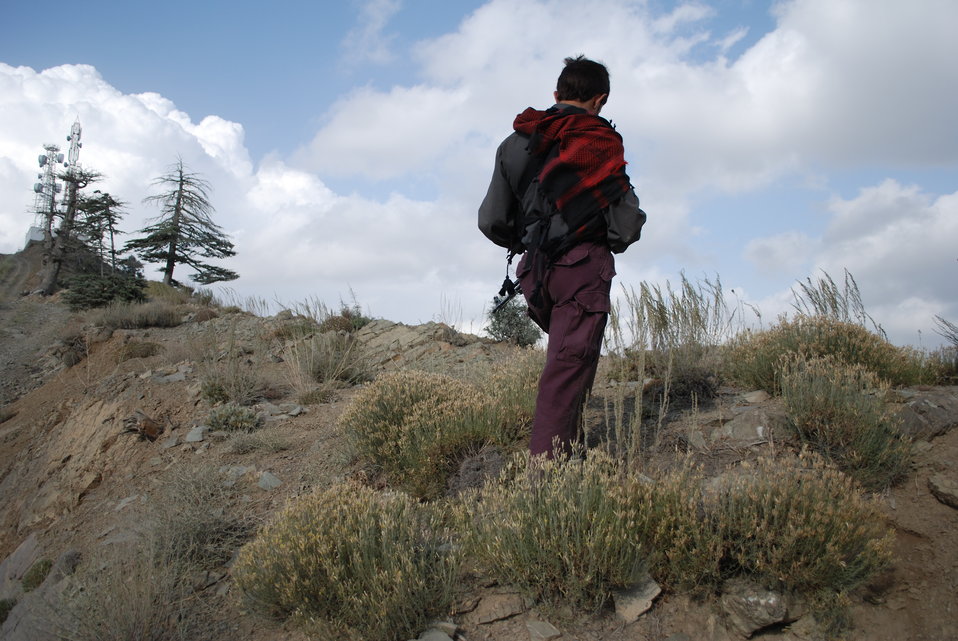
'On the Road' in Paktya Province